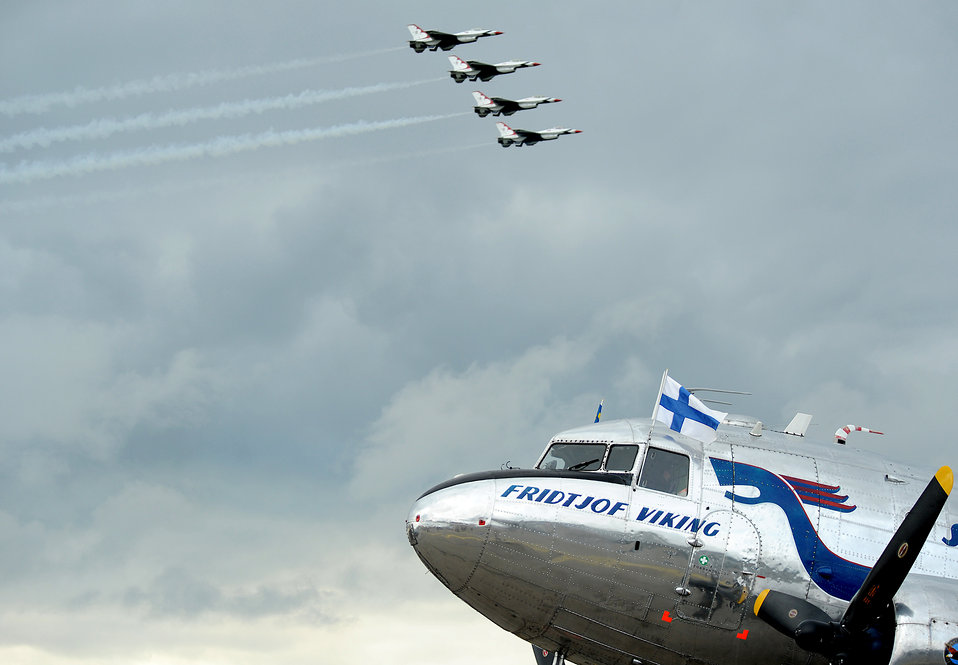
Thunderbirds in Finland

The Thunderbirds perform June 18, 2011, above Turku, Finland.